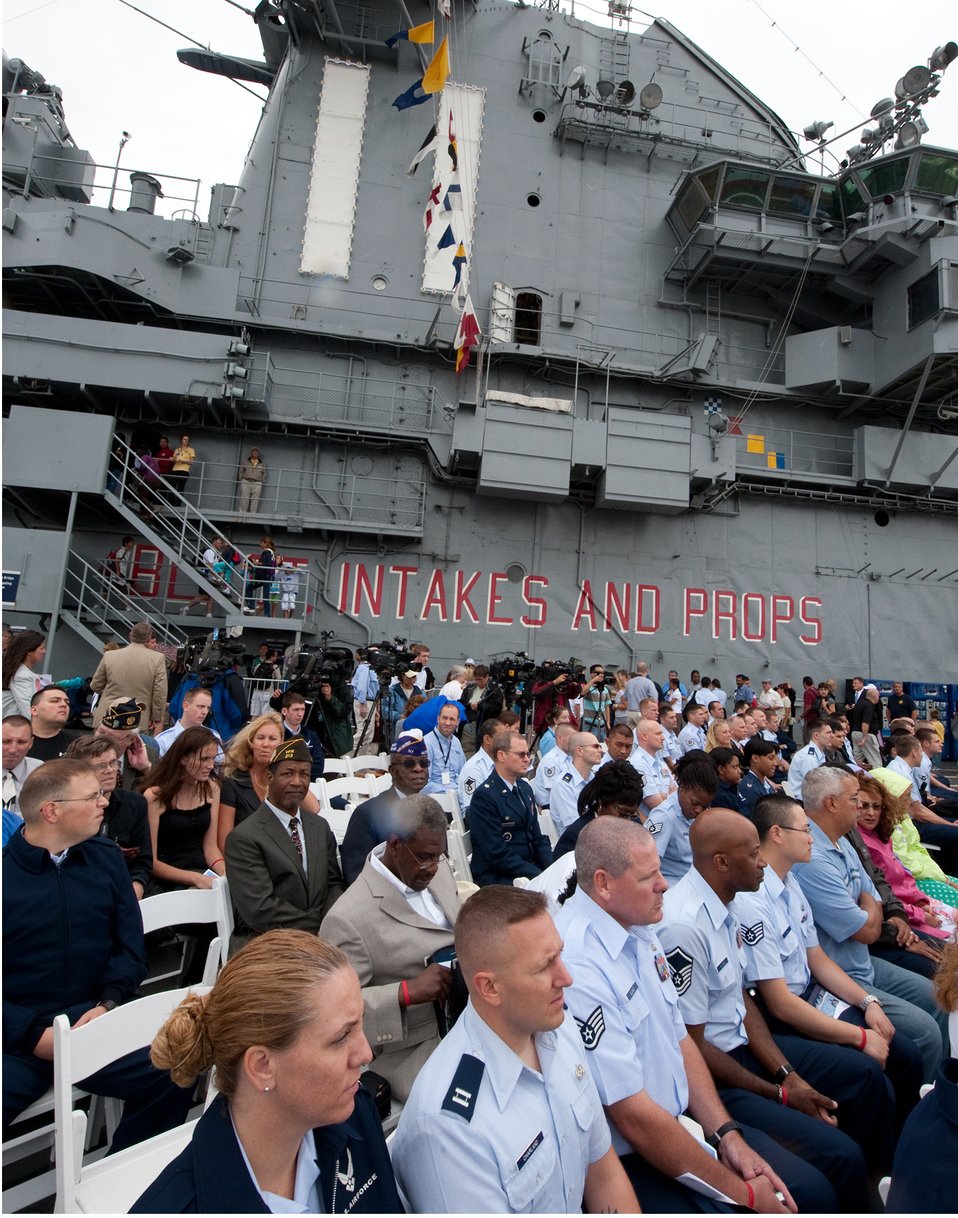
Opening ceremony for Air Force Week

National and international guests attend the Air Force Week New York City proclamation ceremony Aug. 24, 2010, at the USS Intrepid Sea, Air and Space Museum.